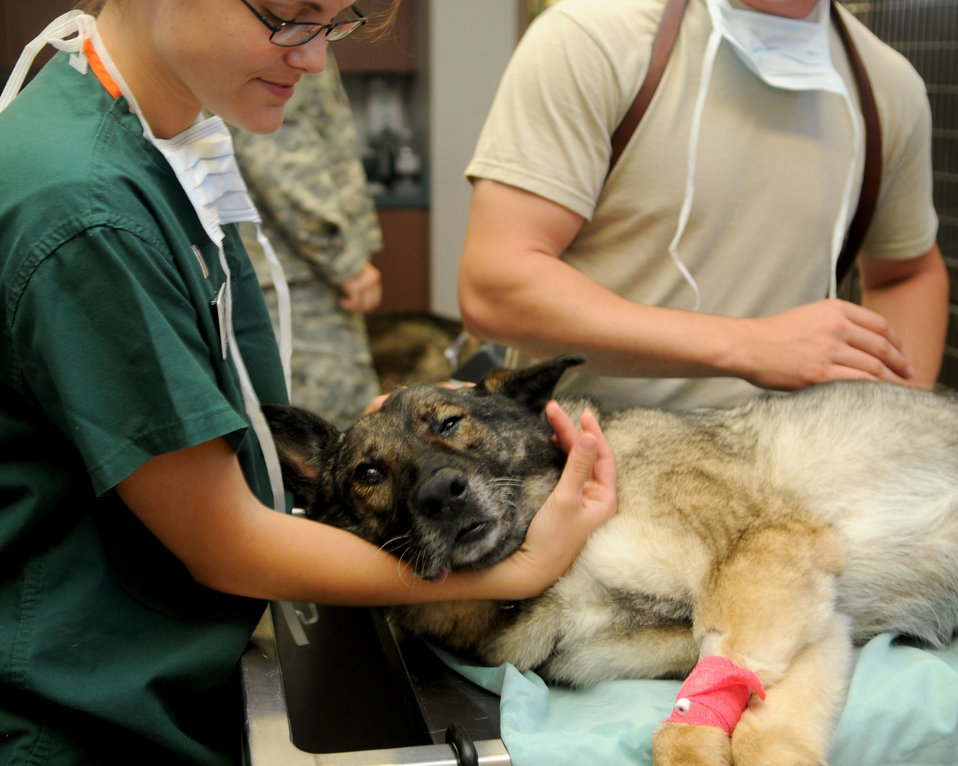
Veterinary clinic's risky K-9 cleaning

Klara, U.S. Air Force 9th Security Forces Squadron military working dog, wakes up after being put under anesthesia at the Beale AFB, Calif., Veterinary Clinic July 20, 2011. If military working dogs develop tooth problem, they don't eat, lack energy, and will be reluctant to bite.